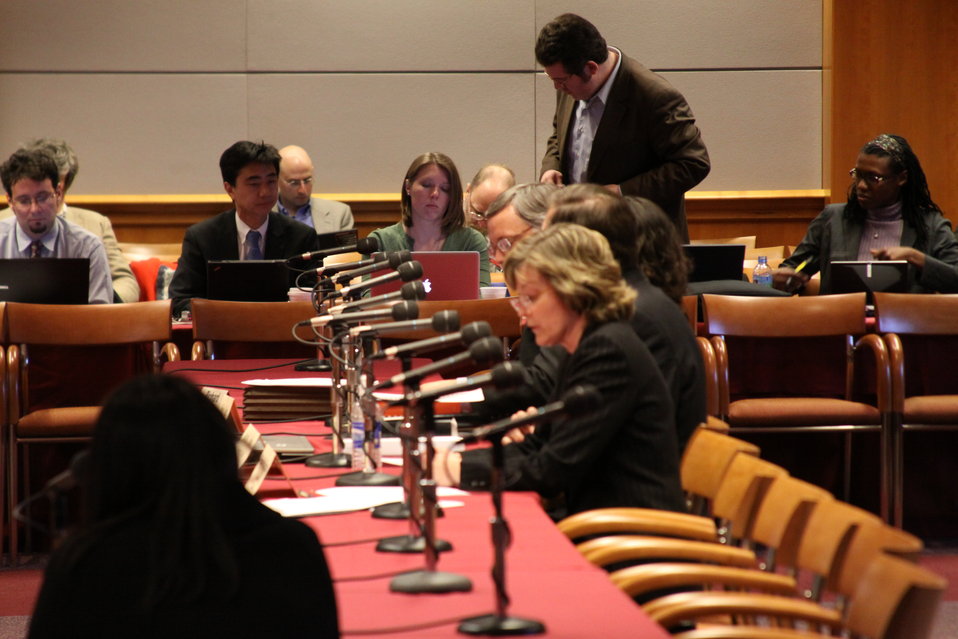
Open Commission Meeting - 2/18/2010

The Federal Communications Commission will hold an Open Meeting in Washington, DC. on February 18, 2010, which will include the following items:

E-Rate: An Order and Notice of Proposed Rulemaking to enable schools that receive funding from the E-Rate program to allow members of the general public to use the schools' Internet access during non-operating hours at no additional cost to the Universal Service Fund. This order and notice do not permit or require any changes to E-Rate applications due on February 11, 2010; Ex Parte Reform: A Notice of Proposed Rulemaking to improve the transparency and effectiveness of the FCC's decision-making process by reforming the ex parte rules; Procedural Reform: A Notice of Proposed Rulemaking to enhance the efficiency, openness, and transparency of the Commission's proceedings by improving and modernizing certain organizational and procedural rules; National Broadband Plan Status Report: Commission staff will report on the status of the National Broadband Plan, providing a framework for the national purposes portion of the Plan.